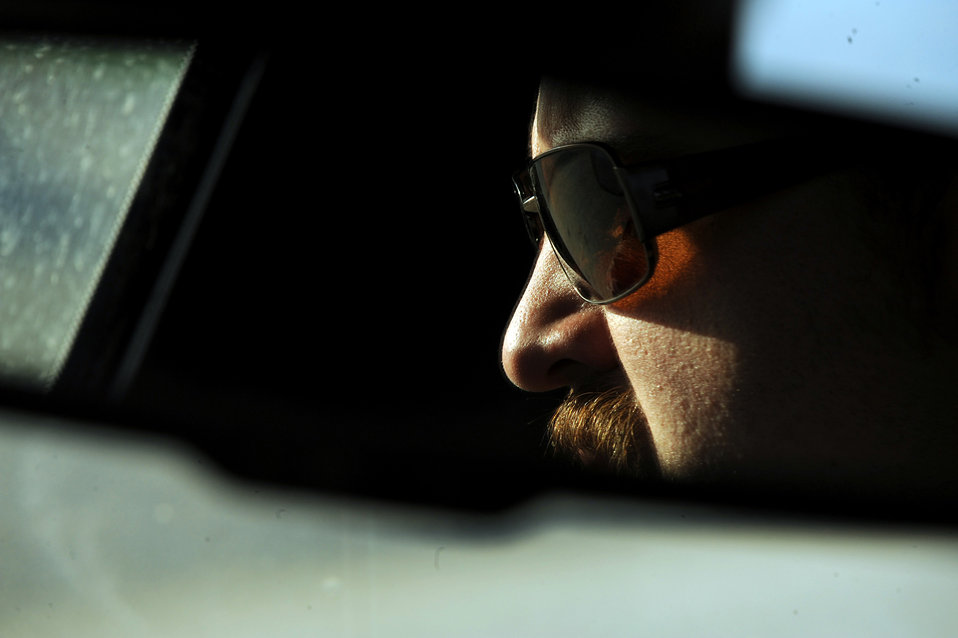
OSI protects Airmen in Afghanistan

Dave Crawford drives in a convoy toward a mission objective during a search and capture mission March 30, 2010, in Parwan Province, Afghanistan. Mr. Crawford is a special agent assigned to the Air Force Office of Special Investigations Expeditionary Det. 2405.